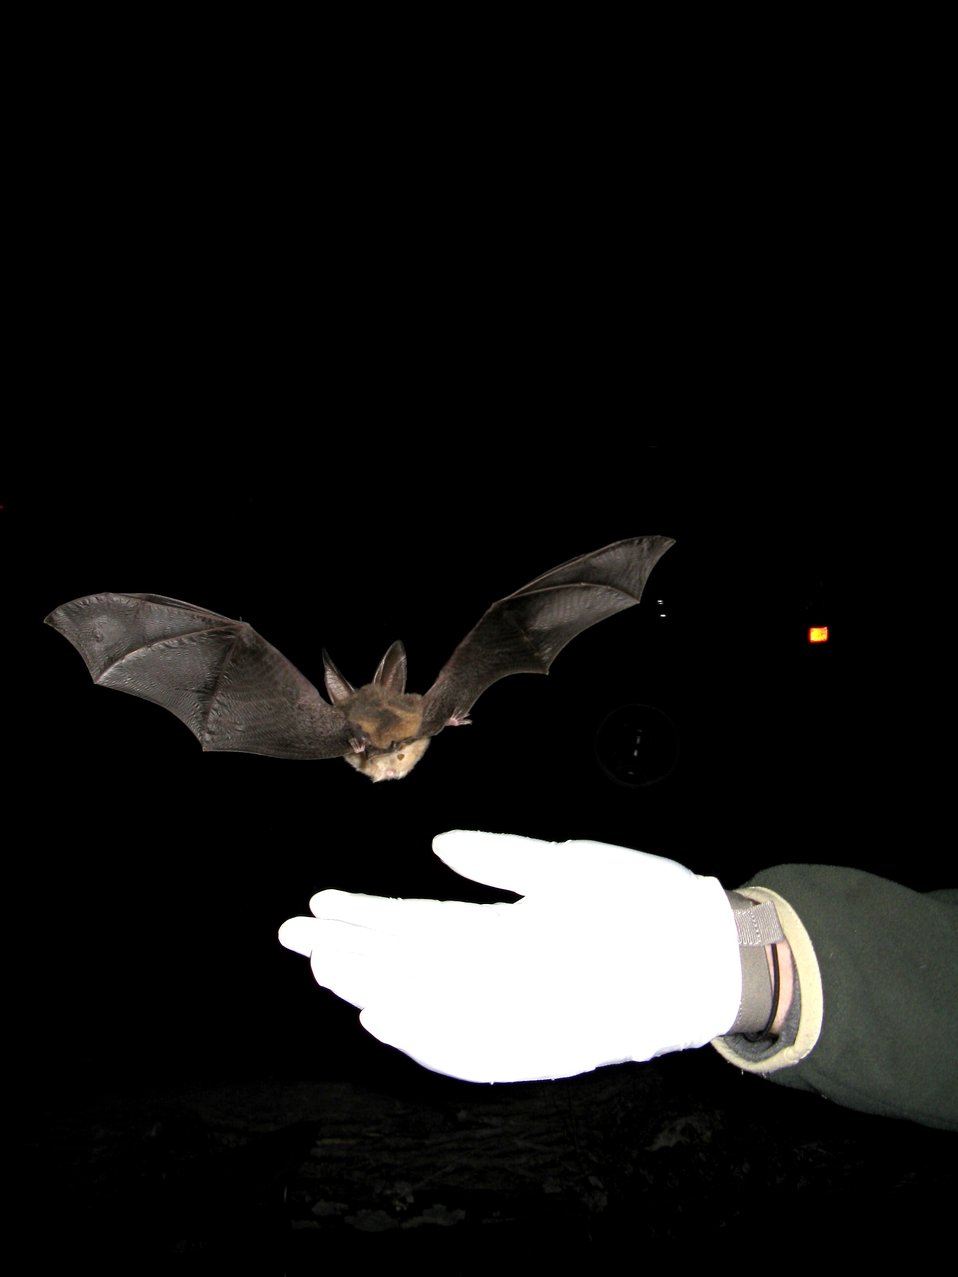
Virginia big-eared bat being released

Release of a Virginia big-eared bat at Repass Saltpetre Cave.